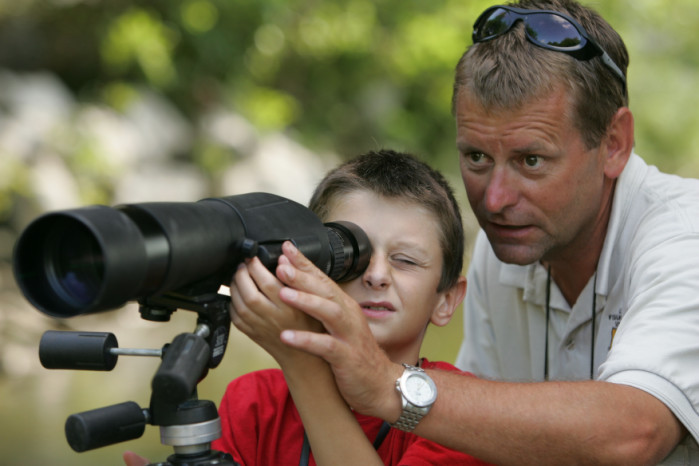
at the spotting scope

Big Muddy National Wildlife Refuge